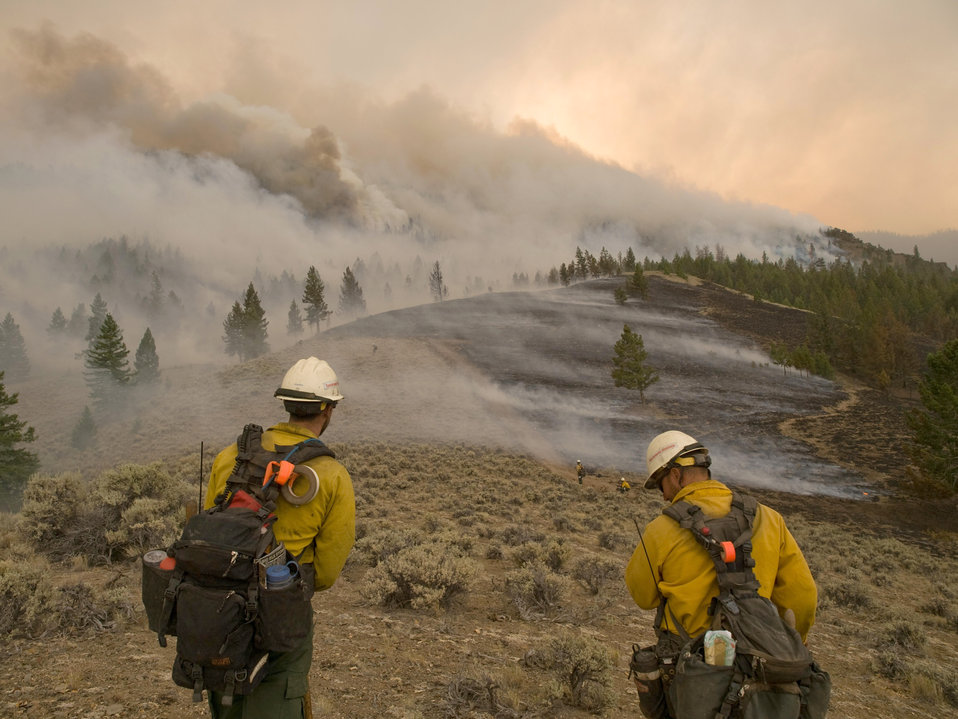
Firefighters work on the Lodgepole Fire. The Lodgepole Fire in the Salmon-Challis National Forest near Challis, ID began on Jul. 20, 2013 by lightning has consumed approximately 13,700 acres and is approximately 15% contained.